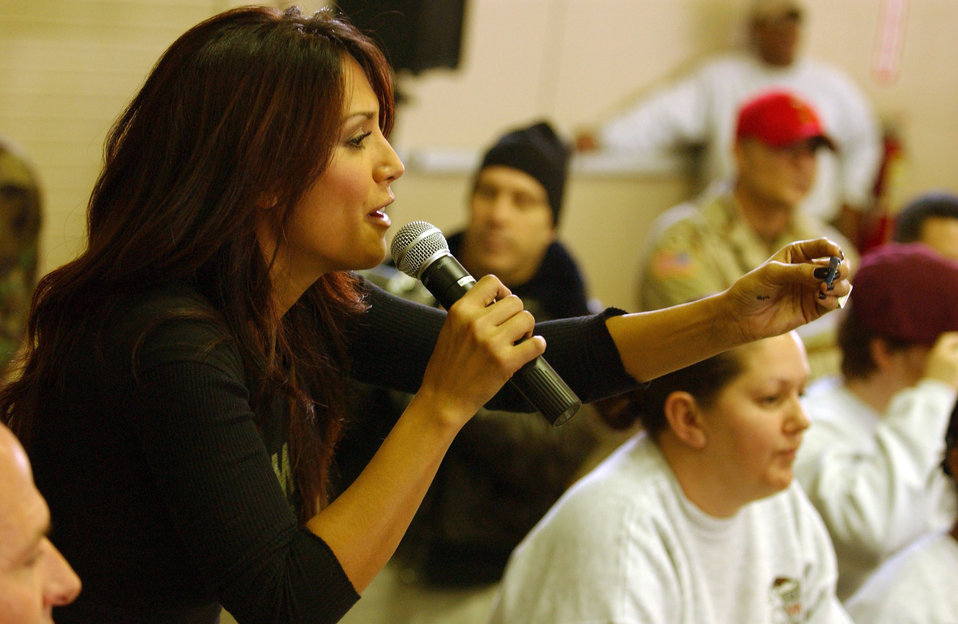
Operation Toy Drop

FORT BRAGG, N.C. (AFPN) -- Leeann Tweeden calls out a number for a jump slot during the 8th Annual Randy Oler Memorial Operation Toy Drop. The event collects toys for the children of military families here and at Pope Air Force Base, N.C., as well as those in the surrounding communities. Paratroopers participated by donating a toy in exchange for a chance to jump with German and Irish military jumpers. To date, Operation Toy Drop has collected and distributed more than 14,000 toys. Mrs. Tweeden is a television personality on Fox Sports.